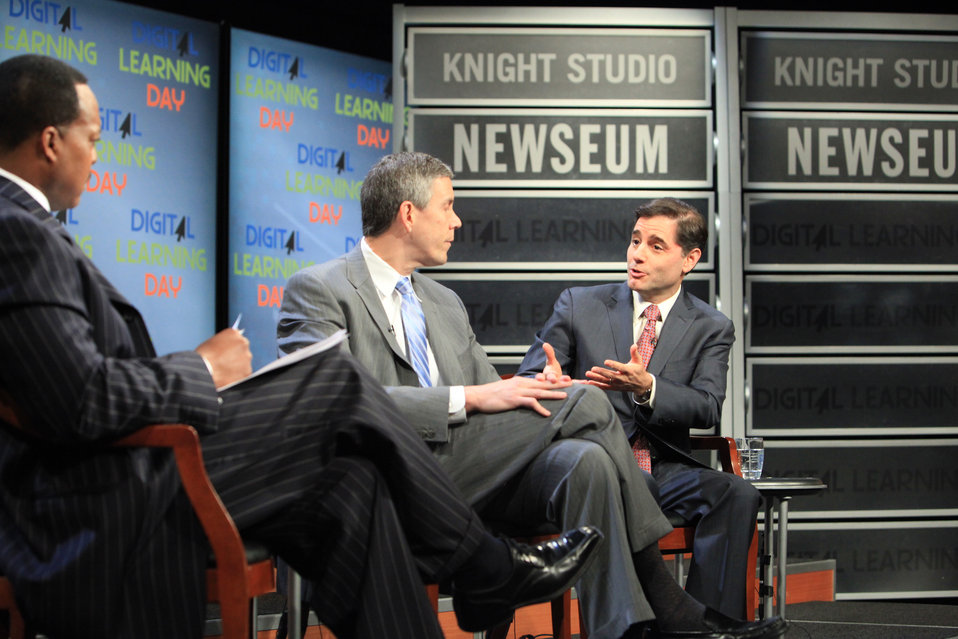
FCC Chairman Genachowski Speaks at the Digital Learning Day Town Hall

FCC Chairman Genachowski discuss digital learning with the U.S. Department of Education Secretary Arne Duncan and ABC7's Leon Harris in the first-ever Digital Learning Day Town Hall in Washington, DC, on February 1, 2012.